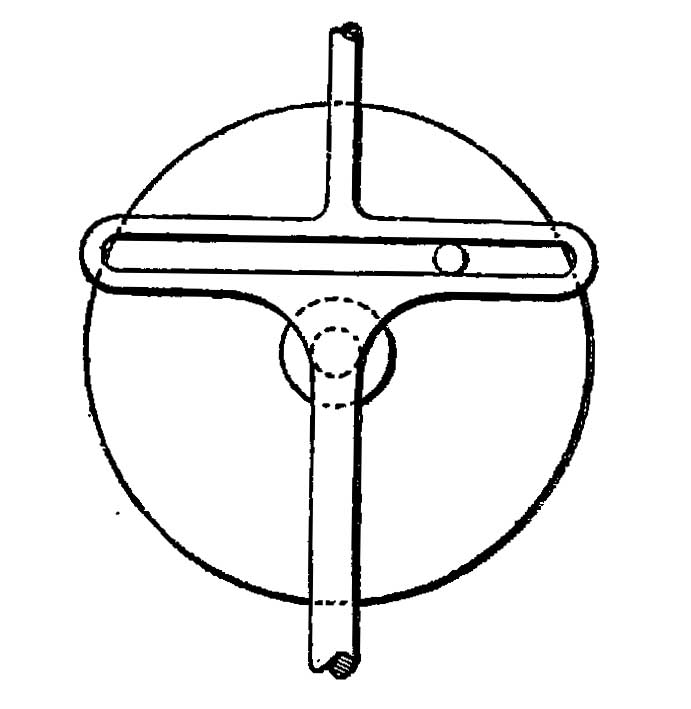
Scanned by uploader from old astronomy article (E G Fischer, 'The Coast and Geodetic Survey Tide Predicting Machine No. 2', Popular Astronomy, vol.20 (1912), pages 269-285) -- too old to be in copyright.